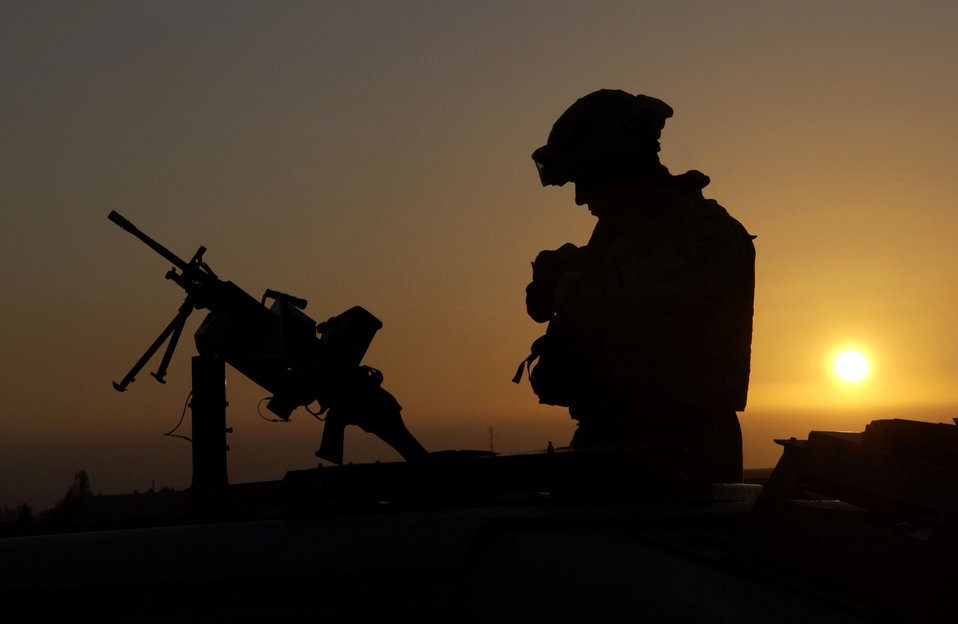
Always on alert

Senior Airman Chris Cabibi checks his gear before beginning his morning patrol at Kirkuk Air Base, Iraq. Security forces there provide an armed response capability to limit, counteract and neutralize hostile action directed against the installation and its vital resources.